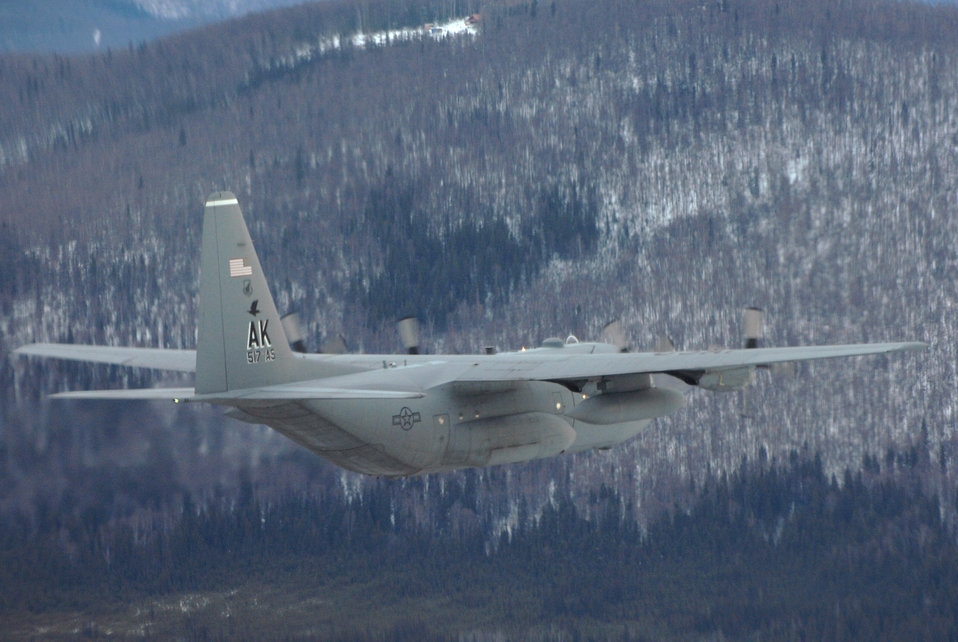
Northern exposure

A C-130 Hercules flys a training mission over Alaska Feb. 1. The C-130 belongs to the 517th Airlift Squadron at Elmendorf Air Force Base, Alaska. The 517th AS will replace its fleet of C-130s with the C-17 Globemaster III in 2007.